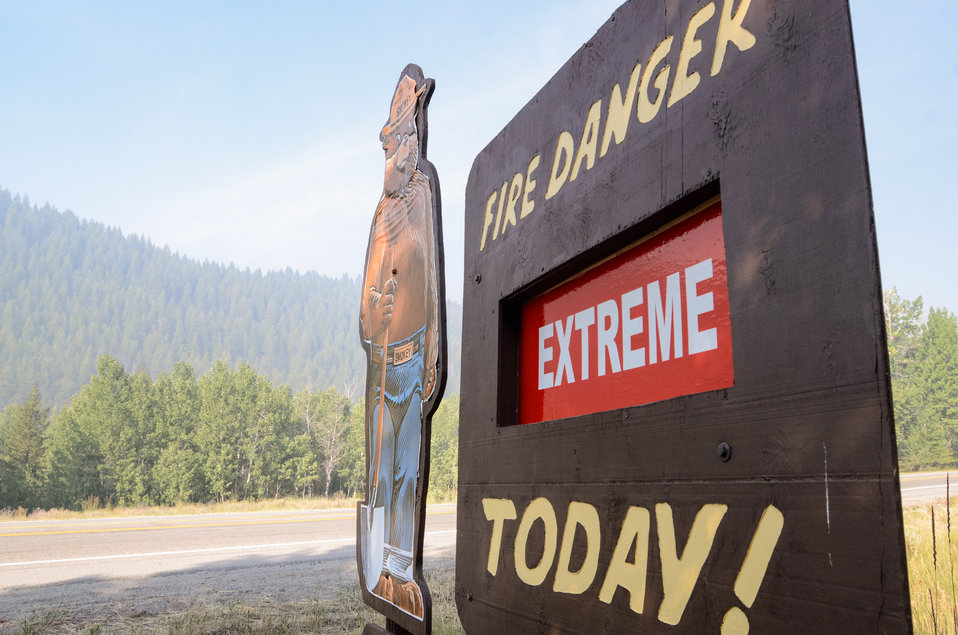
A road side Smokey Bear sign continues to tell motorists that the fire conditions are 'Extreme' today, during the Beaver Creek Fire, in the U.S. Department of Agriculture (USDA) Forest Service (FS) Sawtooth National Forest and Bureau of Land Management (BLM) lands, near Hailey, ID, on Tuesday, Aug 20, 2013.